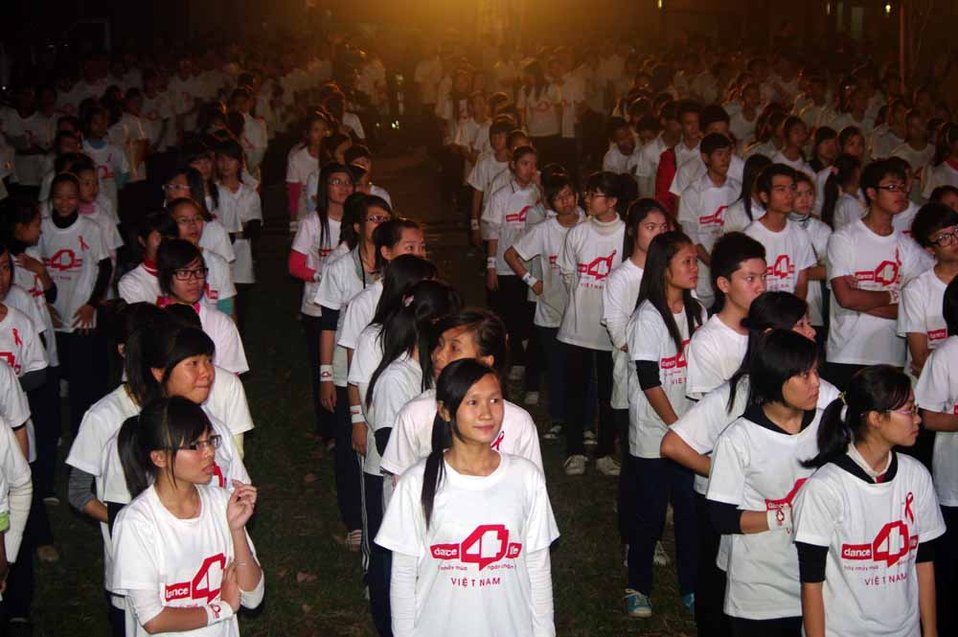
dance4life, Hanoi